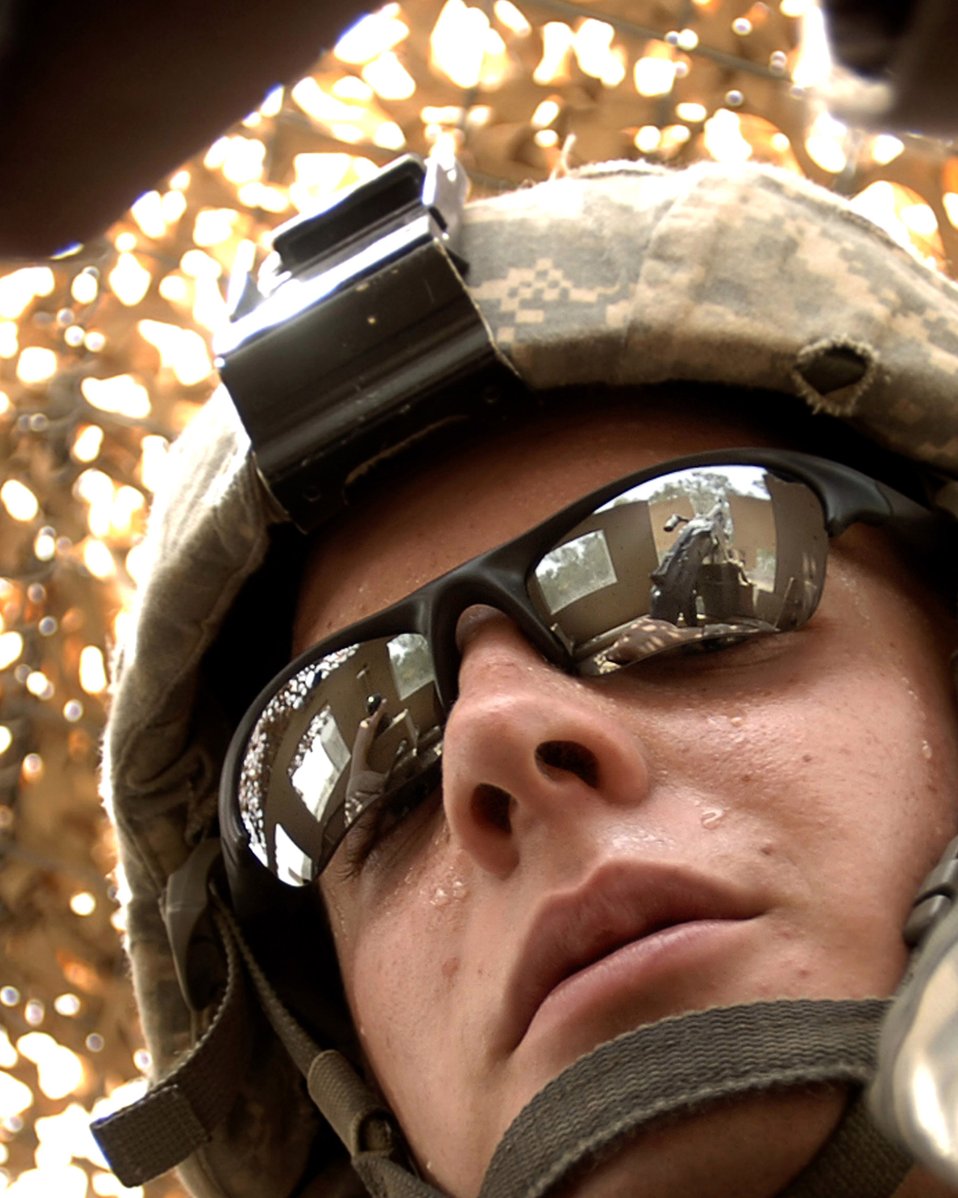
The heat is on

Senior Airman Ian Ramirez performs turret duty in 108-degree heat on an up-armored Humvee as part of a four-vehicle convoy to Iraqi police stations May 9 in Baghdad, Iraq.